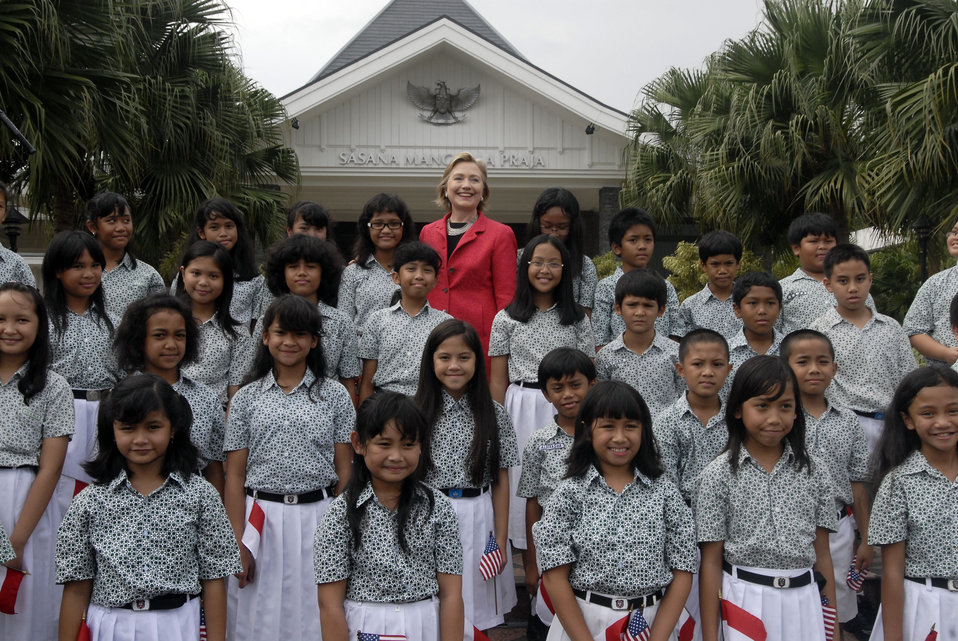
Secretary Clinton in Jarkarta With Children's Choir

Secretary Clinton with Menteng Elementary School 1 Children's Choir in Jarkarta, Indonesia February 18, 2009.